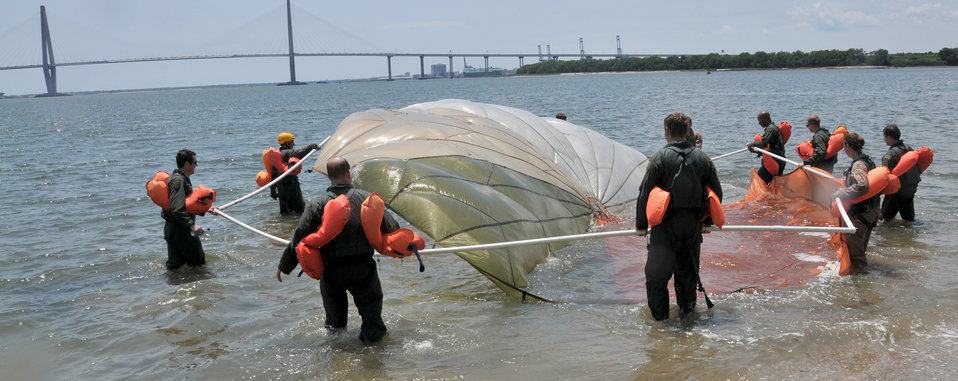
Water survival training course

Ten Airmen from Joint Base Charleston, South Carolina carry a parachute from the shore to the water during a seven-hour long water survival training course May 2, 2011, at the Charleston Harbor, South Carolina.